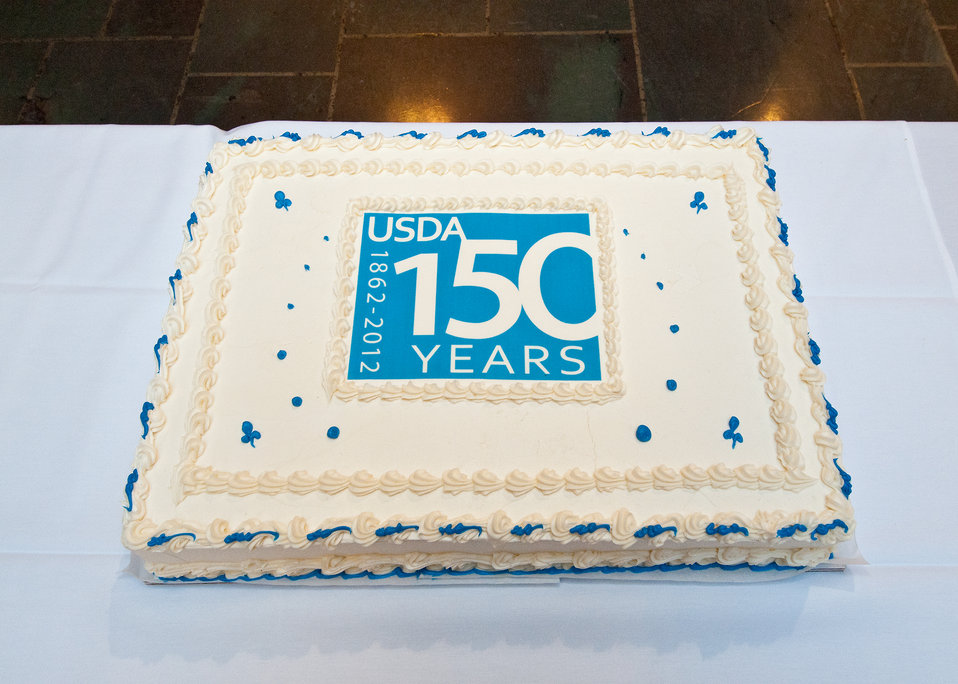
A soft launch of the upcoming year long celebration and unveiling the graphic for the of the United States Department of Agriculture’s 150th anniversary was held in Washington, DC Wednesday, November 2, 2011. President Abraham Lincoln established the United States Department of Agriculture in 1862. USDA stills fulfills the vision he set forth when he called us the “People’s Department” touching the lives of every American everyday. Throughout the coming year USDA will commemorate important events, such as, the signing of the Department of Agriculture Organic Act on May, 15, 1862 by President Lincoln, which established the Department, and the June signing of the Morrill Act to establish our public land grant universities.